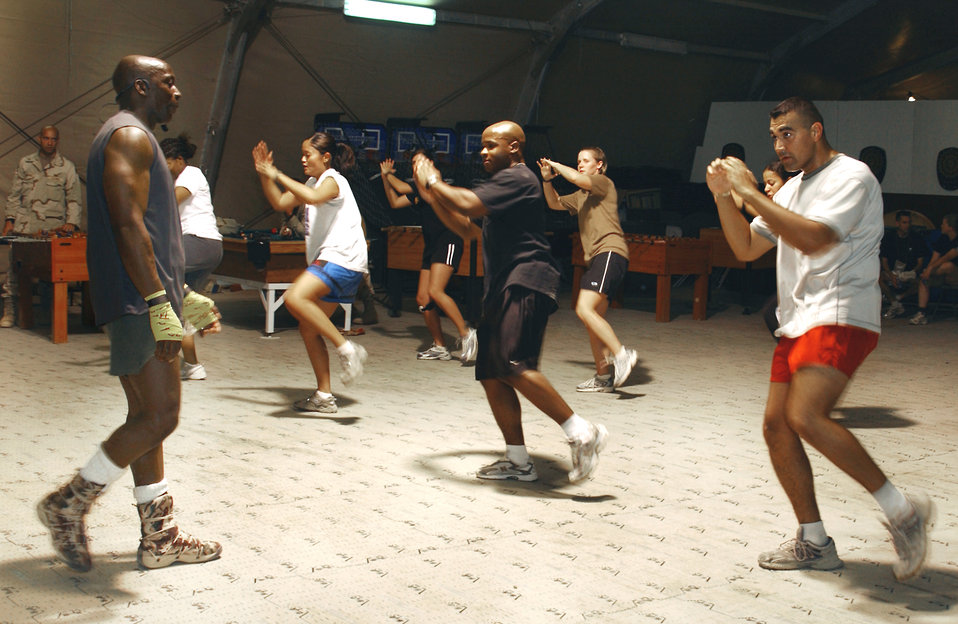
Tae Bo in Iraq

KIRKUK AIR BASE, Iraq -- Billy Blanks leads a Tae Bo training session for people stationed here Sept. 28. Blanks was touring different bases throughout Iraq signing autographs and performing Tae Bo sessions for troops deployed here.